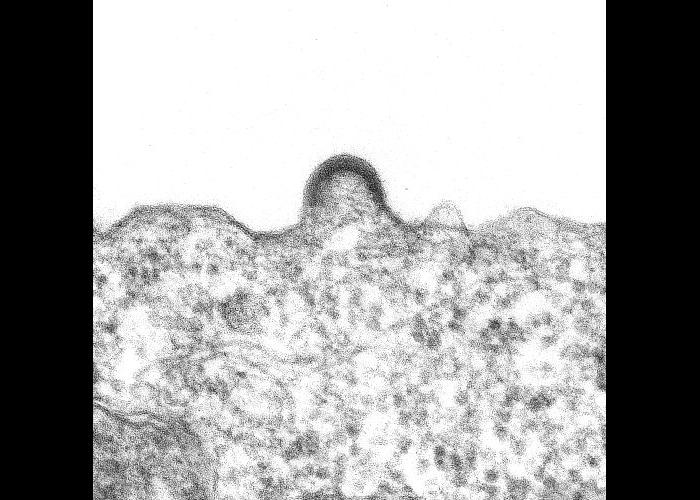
HIV-1 budding from cultured lymphocyte. Transmission electron micrograph.